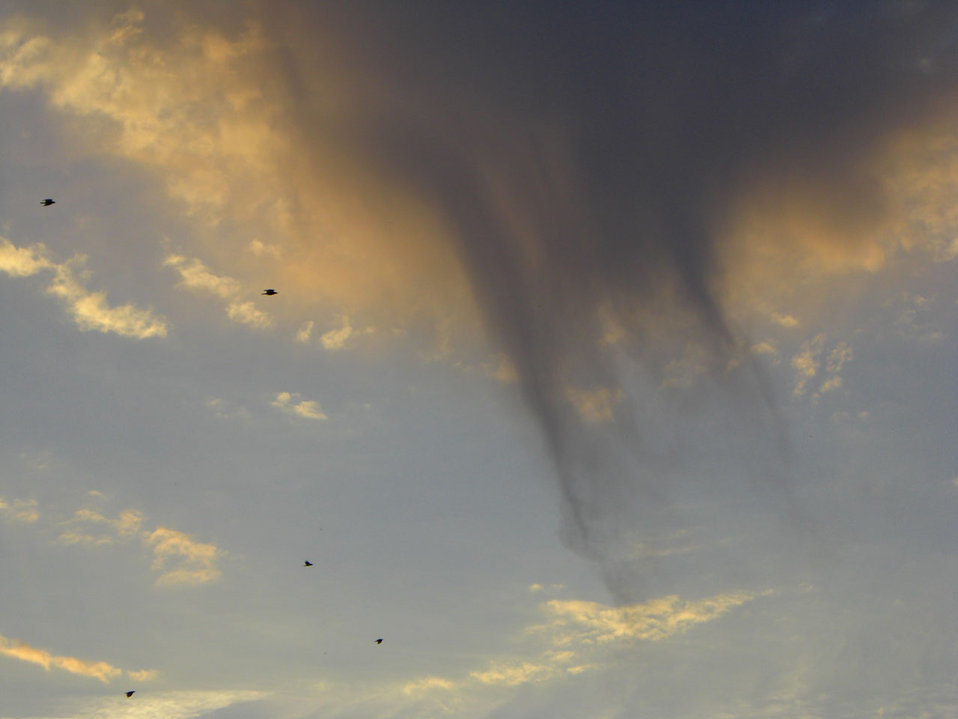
Black cloud no rain

Weird black cloud that produced no rain..